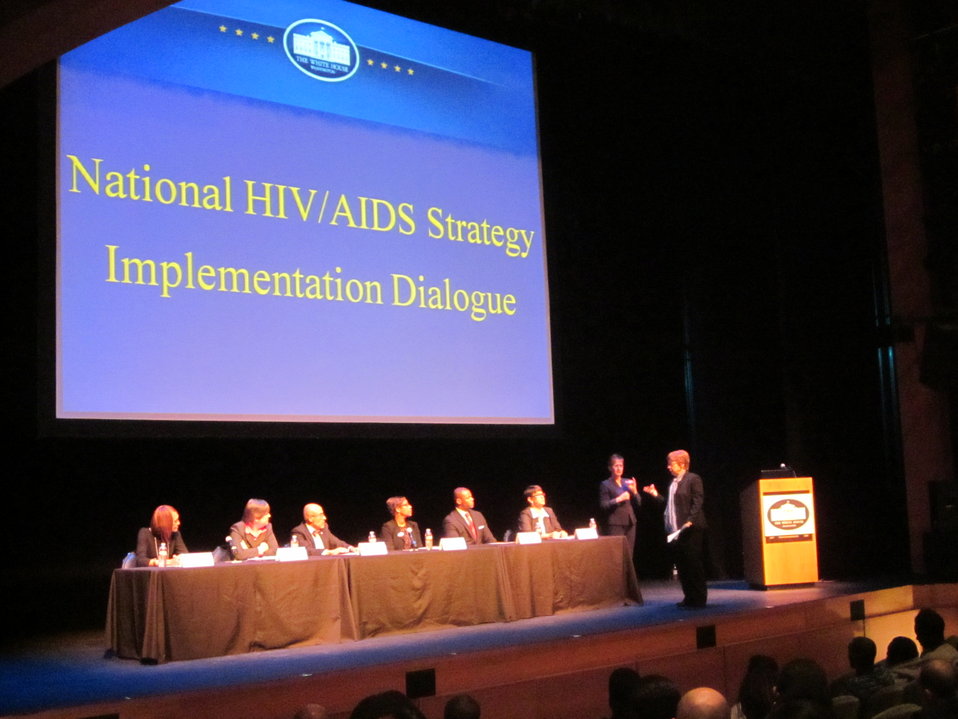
Baton Rouge Pics 060